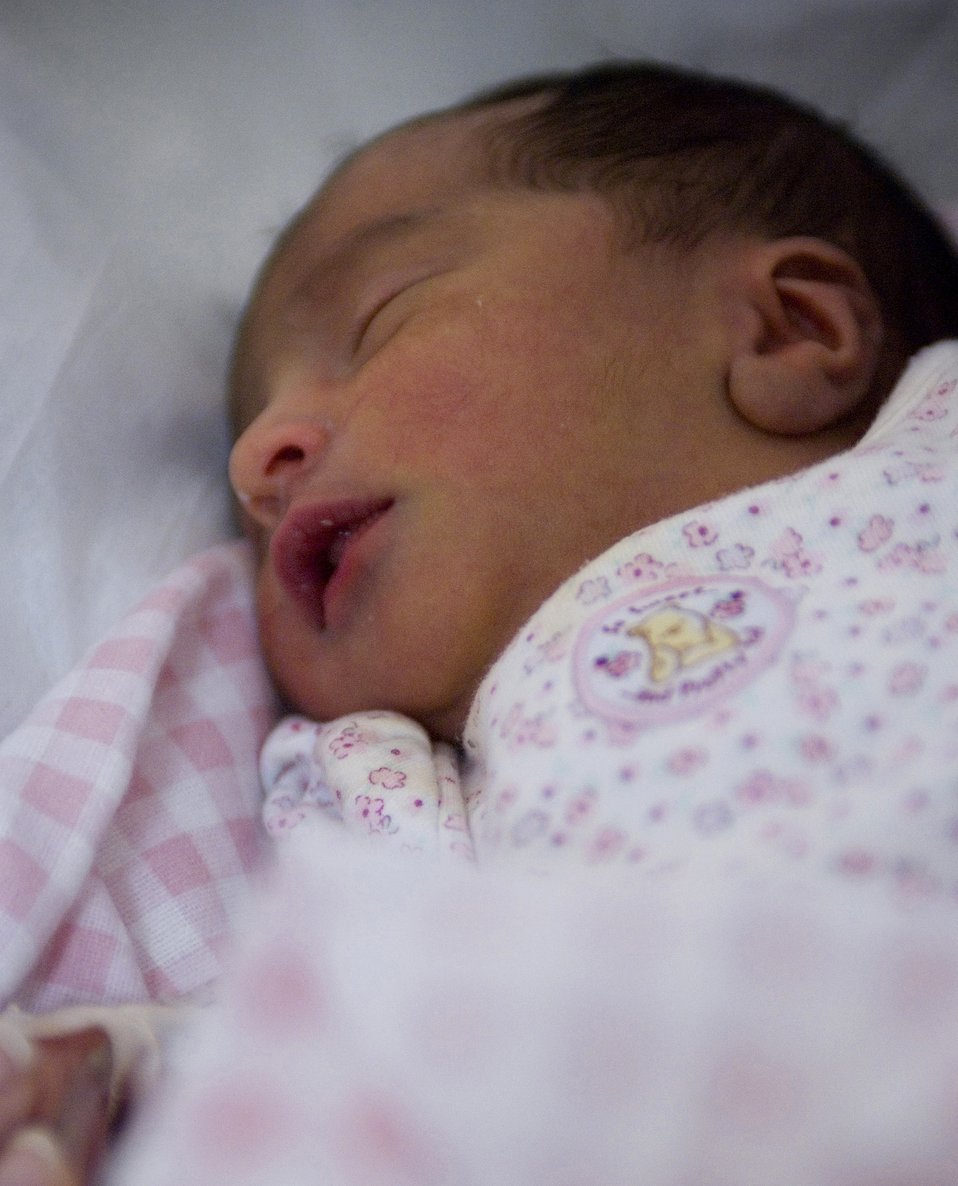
First Afghan baby born at Bagram Air Field

Zahra is the first Afghan baby born in the Craig Joint Theater Hospital at Bagram Airfield, Afghanistan. She was born just after 5 a.m. Oct. 4, by a cesarean section.